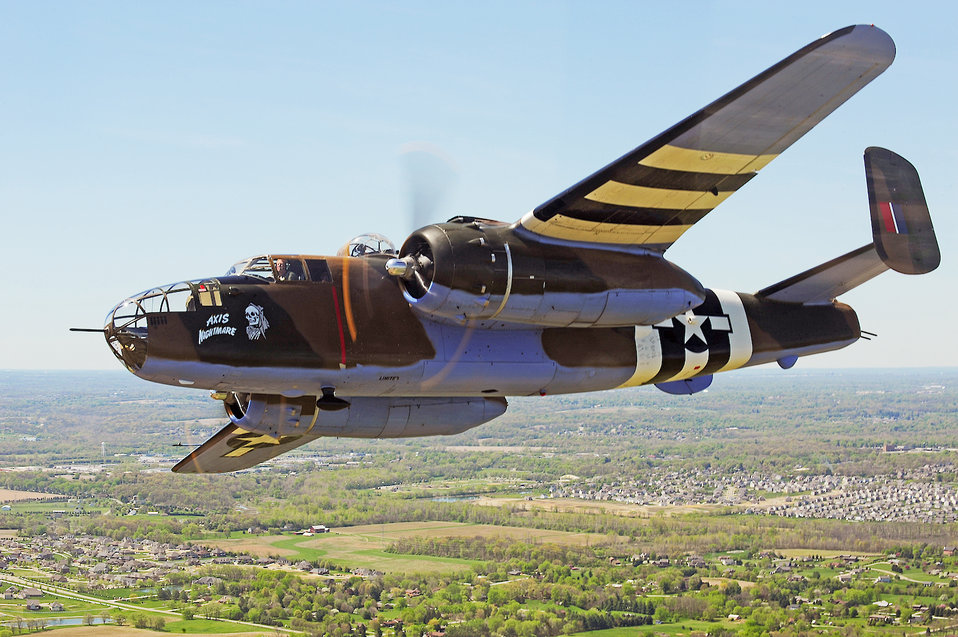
Out for a spin

A vintage B-25 Mitchell